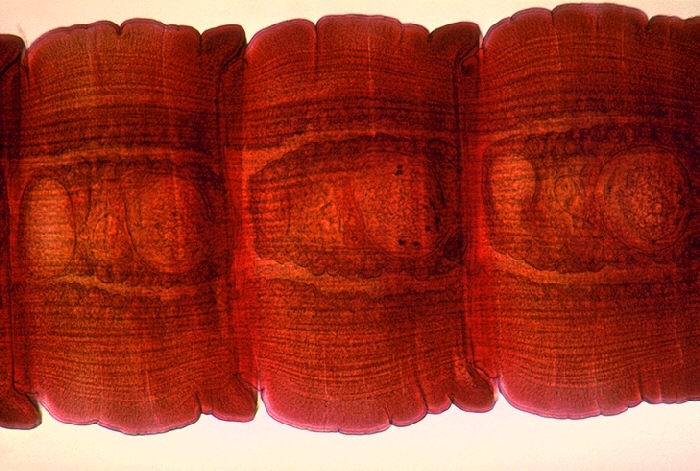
Anterior chain of Mesocestoides sp.